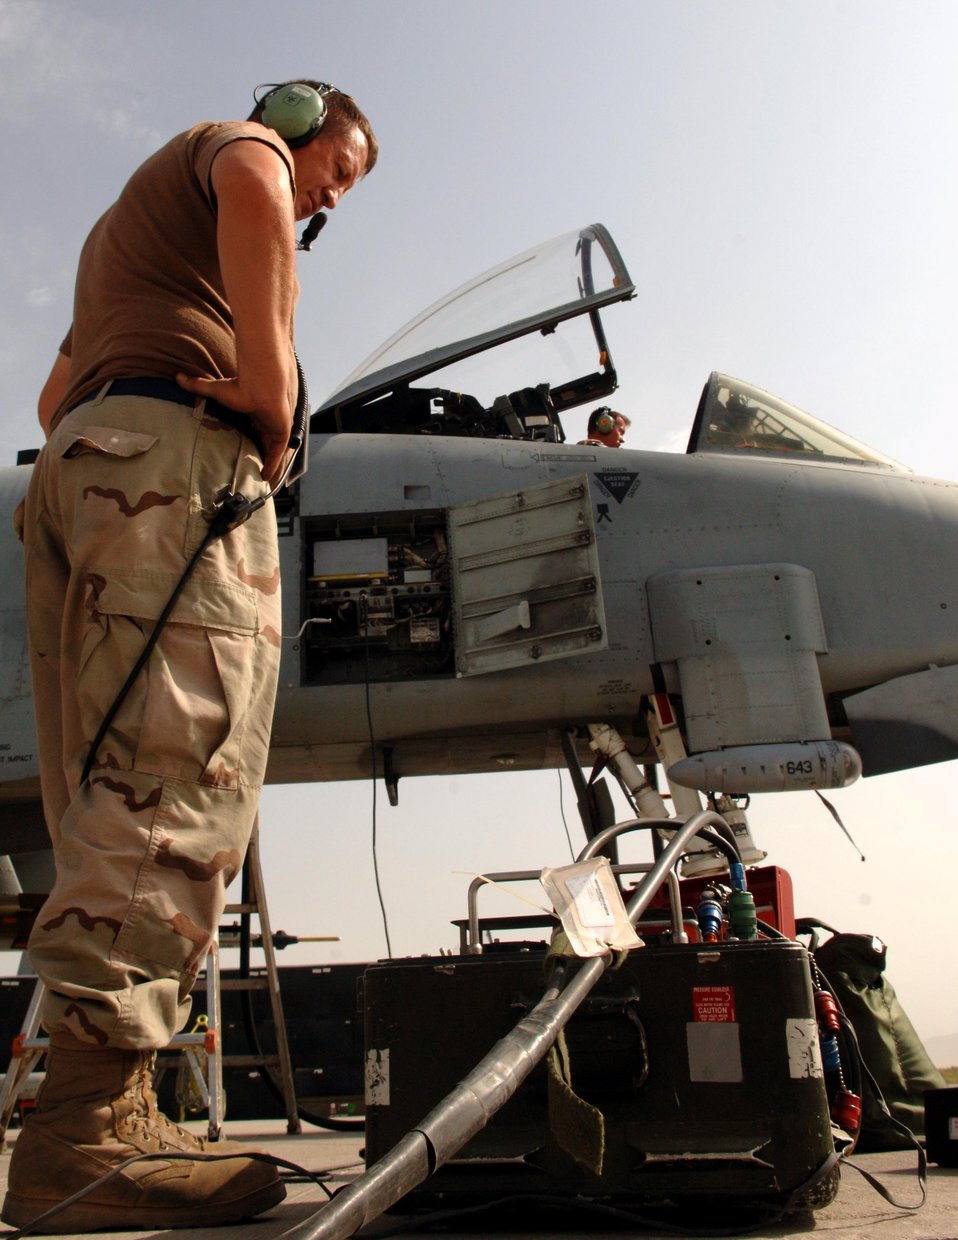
A-10 check

Tech. Sgt. Carl Clark (left) and Master Sgt. Dan Abrams perform an altimeter check on an A-10 Thunderbolt II at Bagram Air Base, Afghanistan, on Aug. 17. They are deployed from the Air Force Reserve Command's 442nd Fighter Wing at Whiteman Air Force Base, Mo.